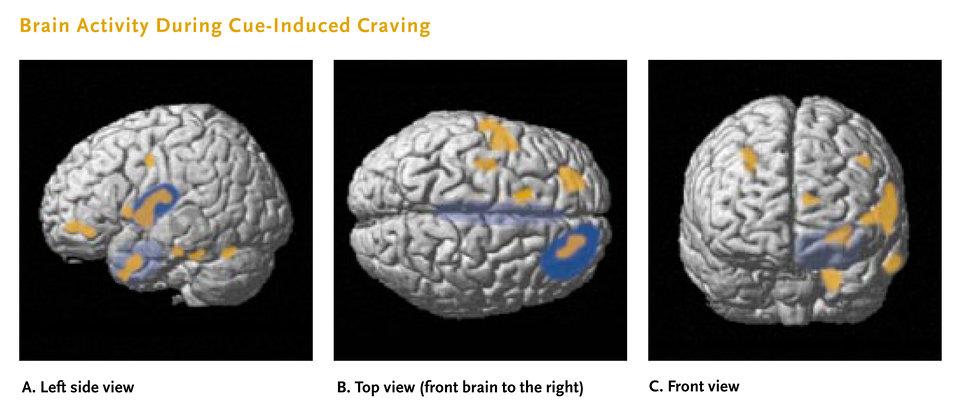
MRI

Methamphetamine reduces gray matter